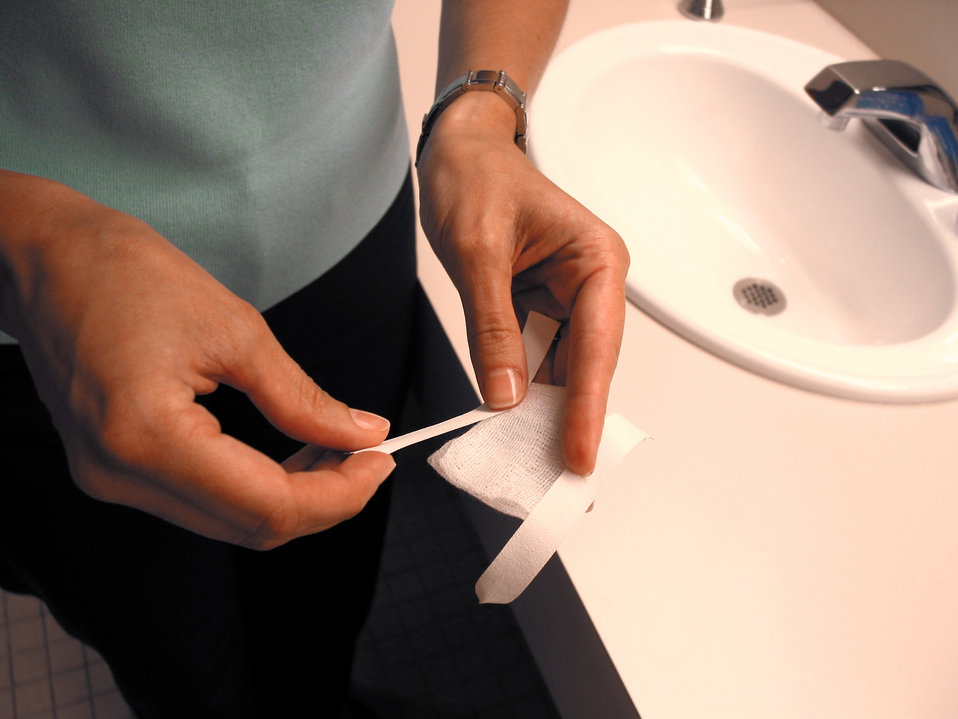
This image demonstrates how a smallpox vaccinee prepares a gauze bandage in order to cover her vaccination site.